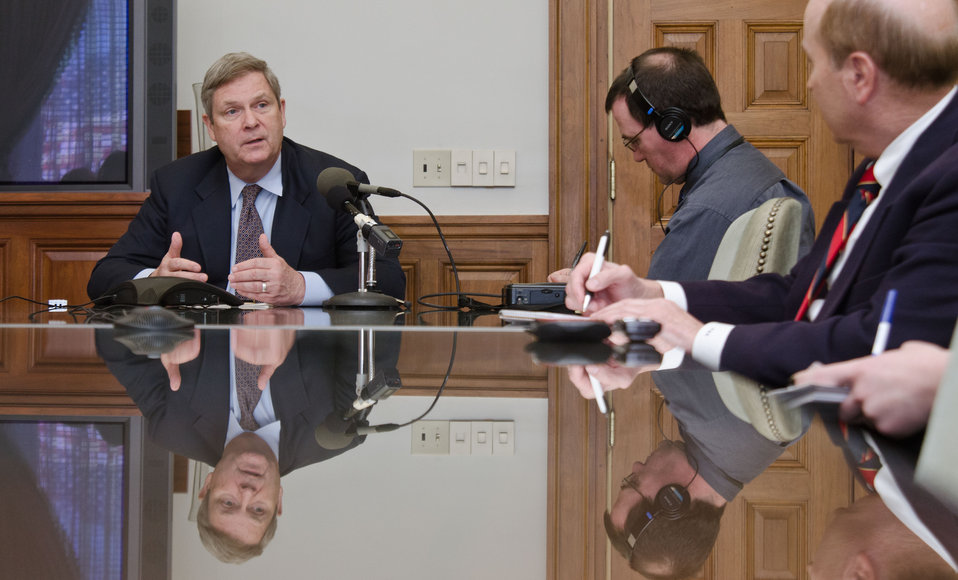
Agriculture Secretary Tom Vilsack (left), responds to a question from Rural TV, D.C. News Bureau Chief Patrick Haggerty (right) during a briefing to in-house reporters and media conference call to review the Agriculture FY2013 budget in Washington, D.C. on Monday, February 13, 2012.